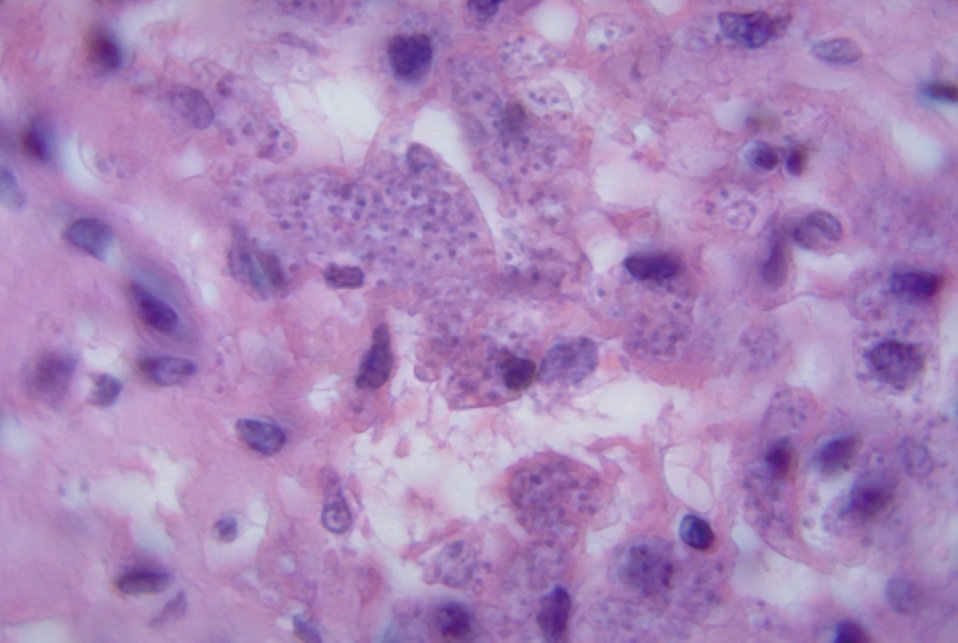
Histopathology of leishmaniasis of subcutaneous tissue due to Leishmania donovani. Parasite.